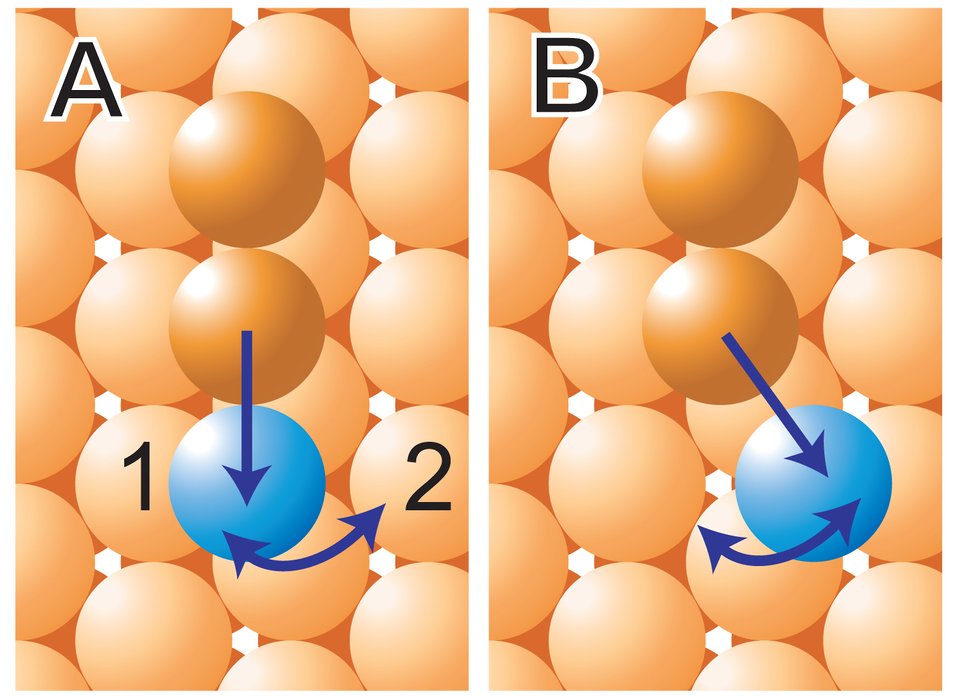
Atomic Switch Figures A and B

NIST researchers used a scanning tunneling microscope (STM) to move a single cobalt atom (blue sphere) in a small molecule back and forth between two positions on a crystal surface.